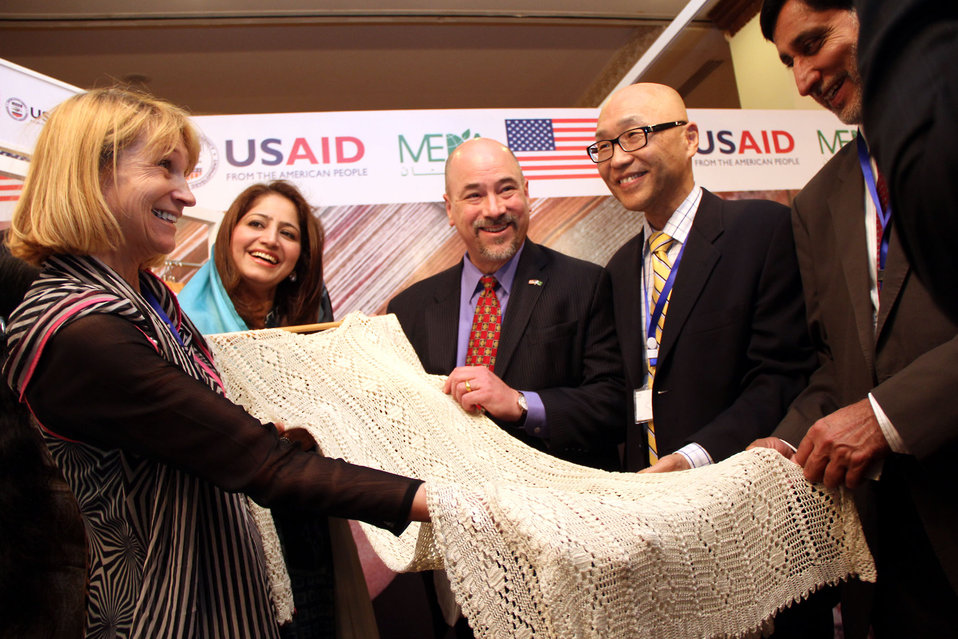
USAID’s Entrepreneurs Project

Ms. Rubina Sadaat Qaimkhani, Minister for Women Development and USAID Deputy Mission Director, Sindh appreciating the work done by rural women hand embellishers at Industry Conference organized by USAID’s Entrepreneurs Project